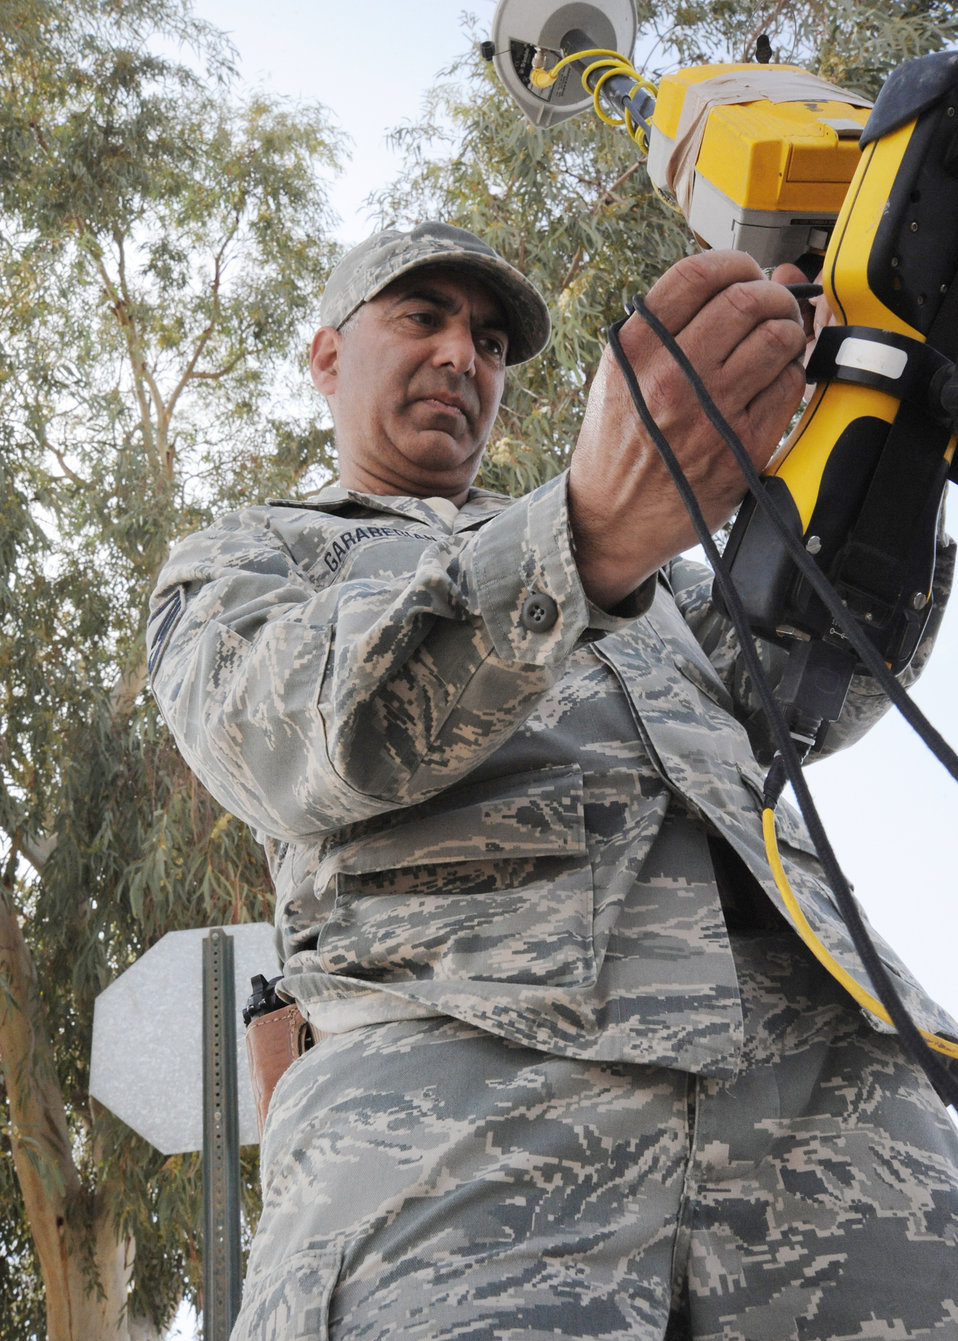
Civil engineers assist with Iraq drawdown

Master Sgt. Varoujan Garabedian inputs data into the global positioning station controller rover April 19, 2010, at Al Asad Air Base, Iraq. Sergeant Garabedian is an engineering assistant for 732nd Expeditionary Prime Beef Squadron.